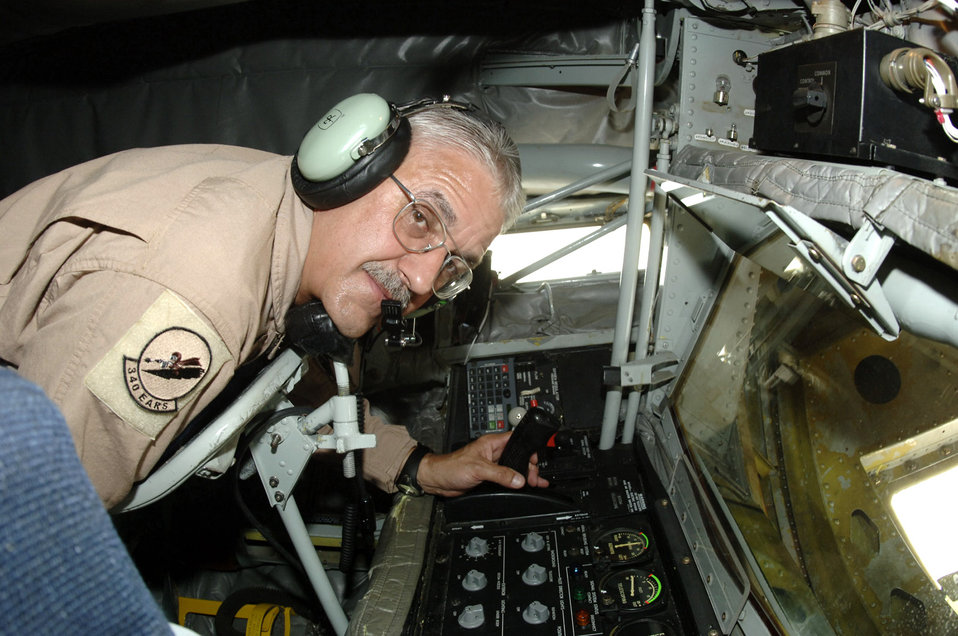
Boom operator flies 10,000 hours

Senior Master Sgt. Anthony Trenga, an in-flight refueling technician, has flown more than 10,000 hours during his 34-year career. He is assigned to the 340th Expeditionary Air Refueling Squadron in Southwest Asia.